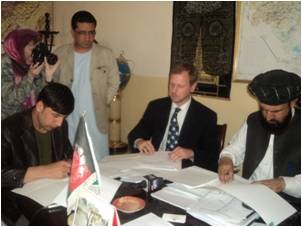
Lincoln Learning Center MOU Signed